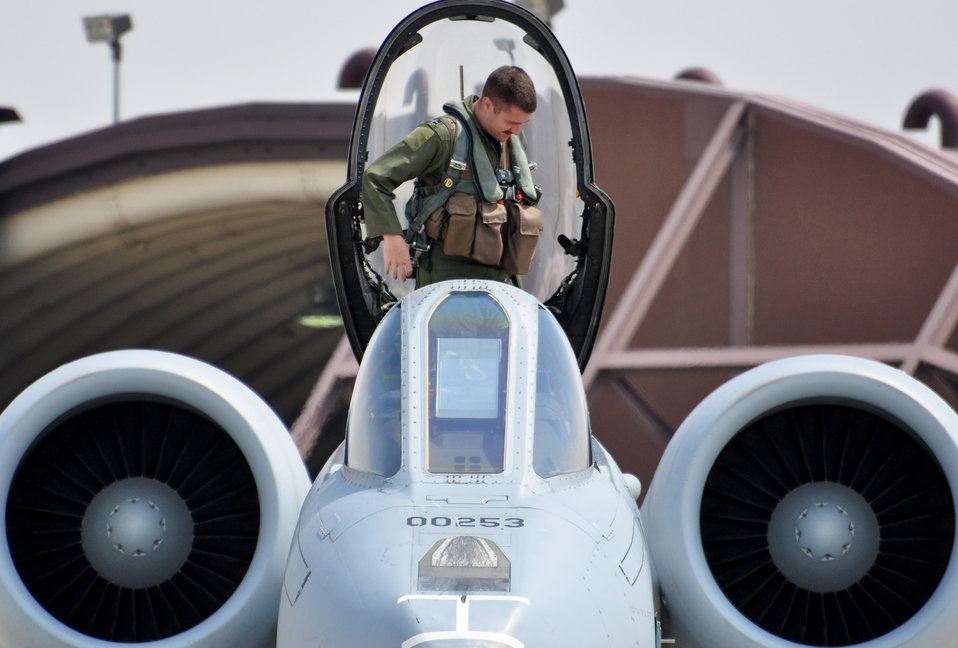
A-10s return

Capt. Dan Haugh climbs out of the cockpit of an A-10 Thunderbolt II April 21, 2011, at Osan Air Base, South Korea. Captain Haugh is assigned to the 25th Fighter Squadron.